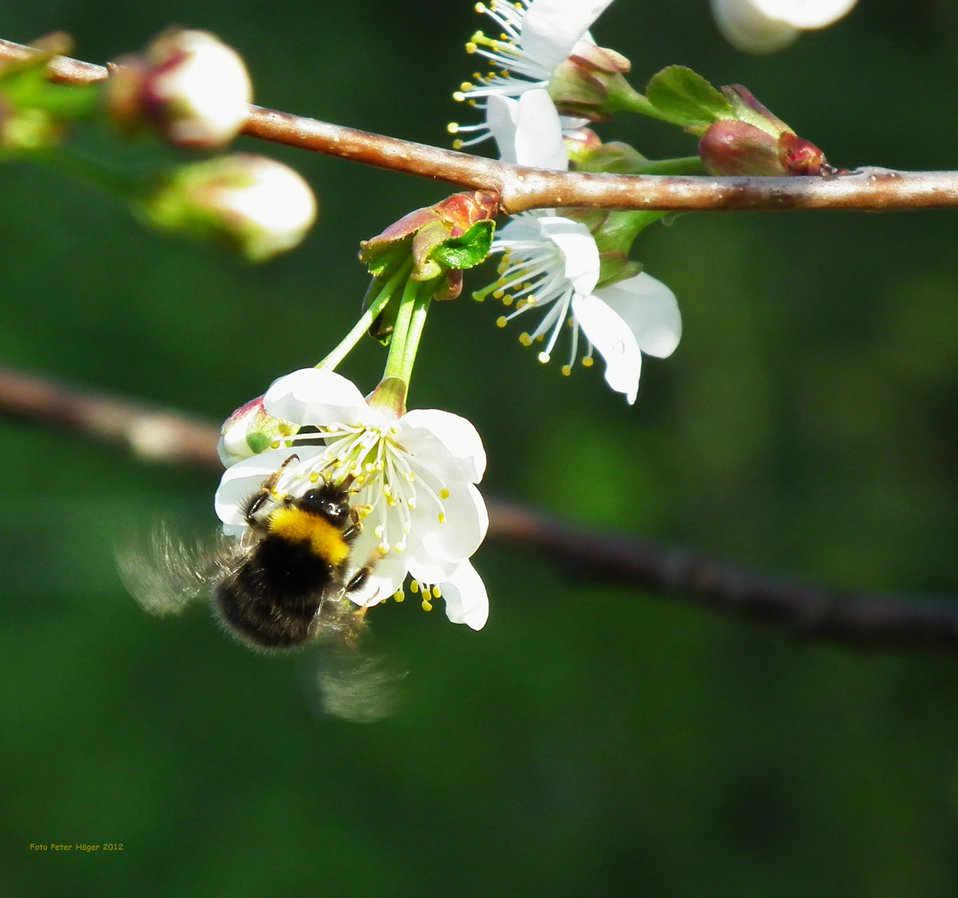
Flowering cherry blossom

With a bumble bee.